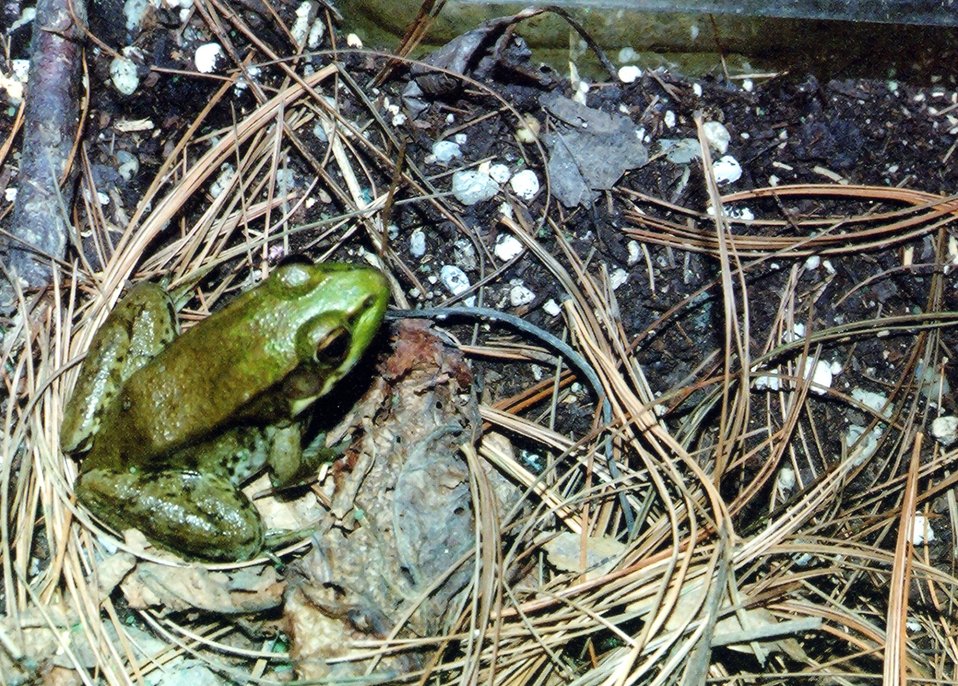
Frog.